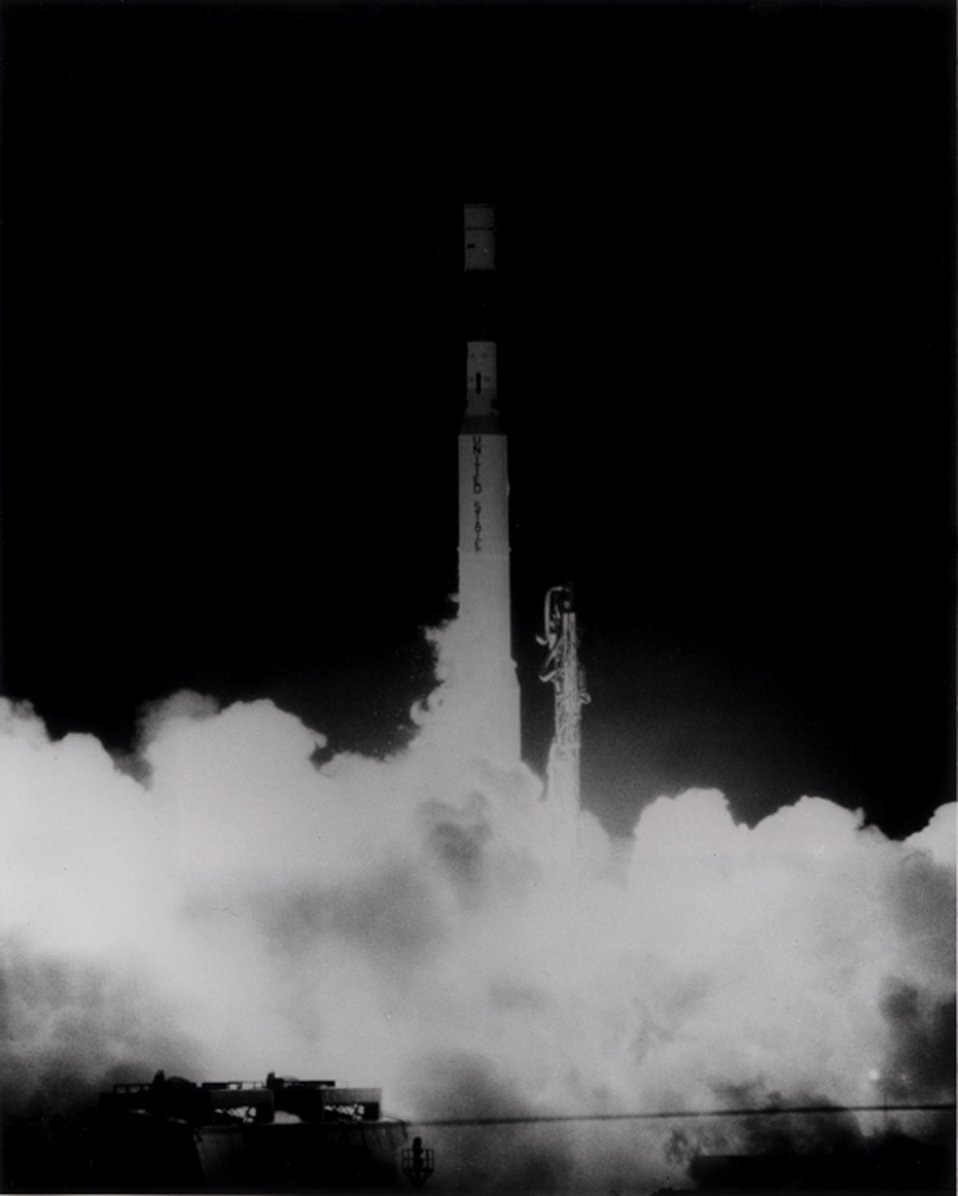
An advanced Nimbus research and development weather observatory, carrying experiments that scientists hope will ultimately lead to reliable long-range weather forecasting was launched April 14, 1969.